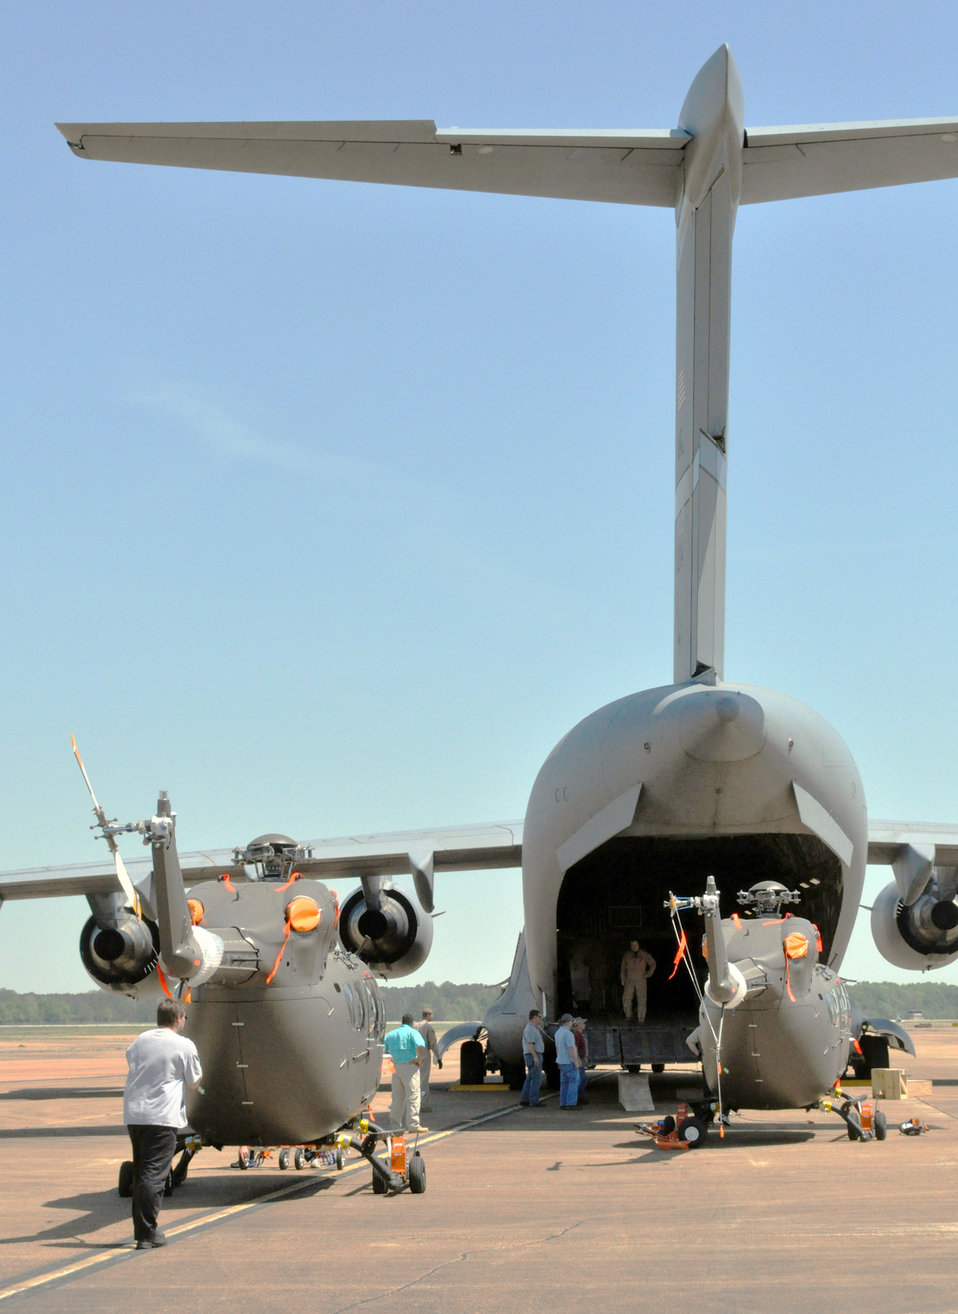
Airmen deliver new Army helicopter to war zone

UH-72 Lakota light utility helicopters are assembled behind a C-17 Globemaster III in preparation for transport April 12, 2010, at Columbus Air Force Base, Miss.